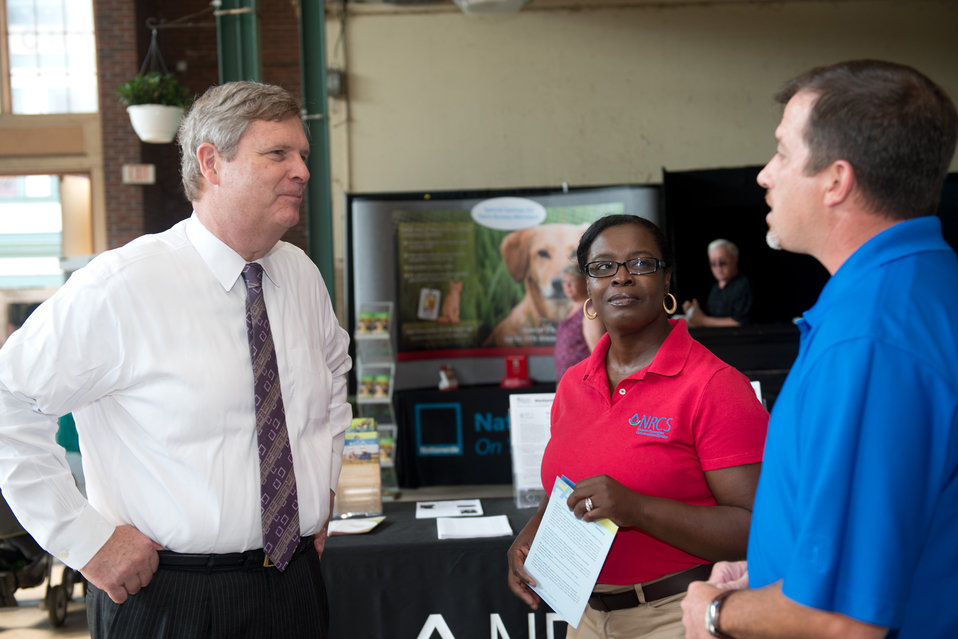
Agriculture Secretary Tom Vilsack(left) discusses the U.S. Department of Agriculture’s (USDA) 150th Anniversary exhibit with USDA Ohio Natural Resource Conservation Service employees TaTrecia Davis (middle) and William Dwyer (right) while visiting the Team USDA Booth at the Ohio State Fair in Columbus, OH on Friday, August 3, 2012.